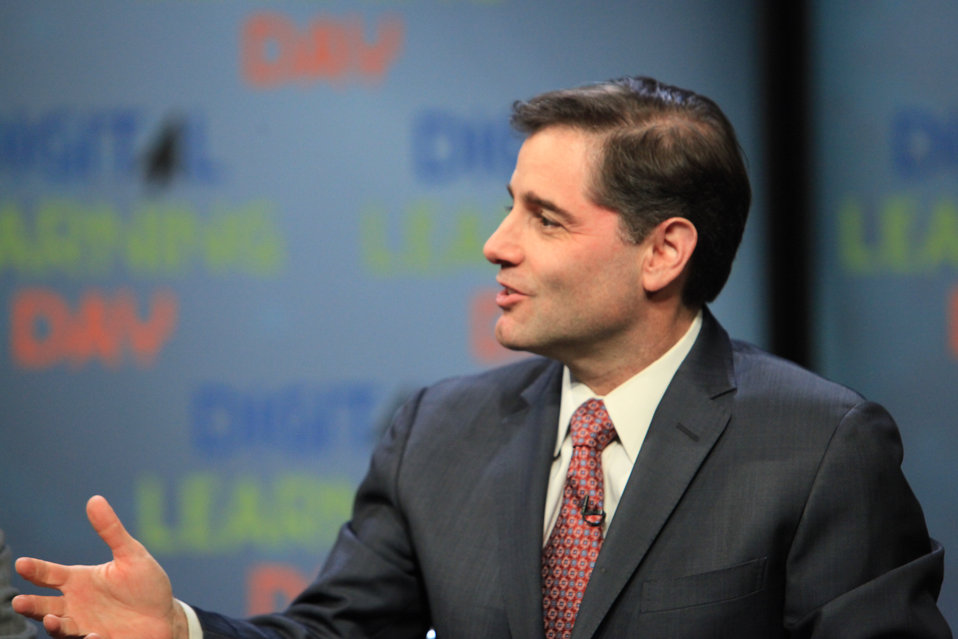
FCC Chairman Genachowski Speaks at Digital Learning Day Town Hall

FCC Chairman Genachowski speaks at the first-ever Digital Learning Day Town Hall in Washington, DC, on February 1, 2012.